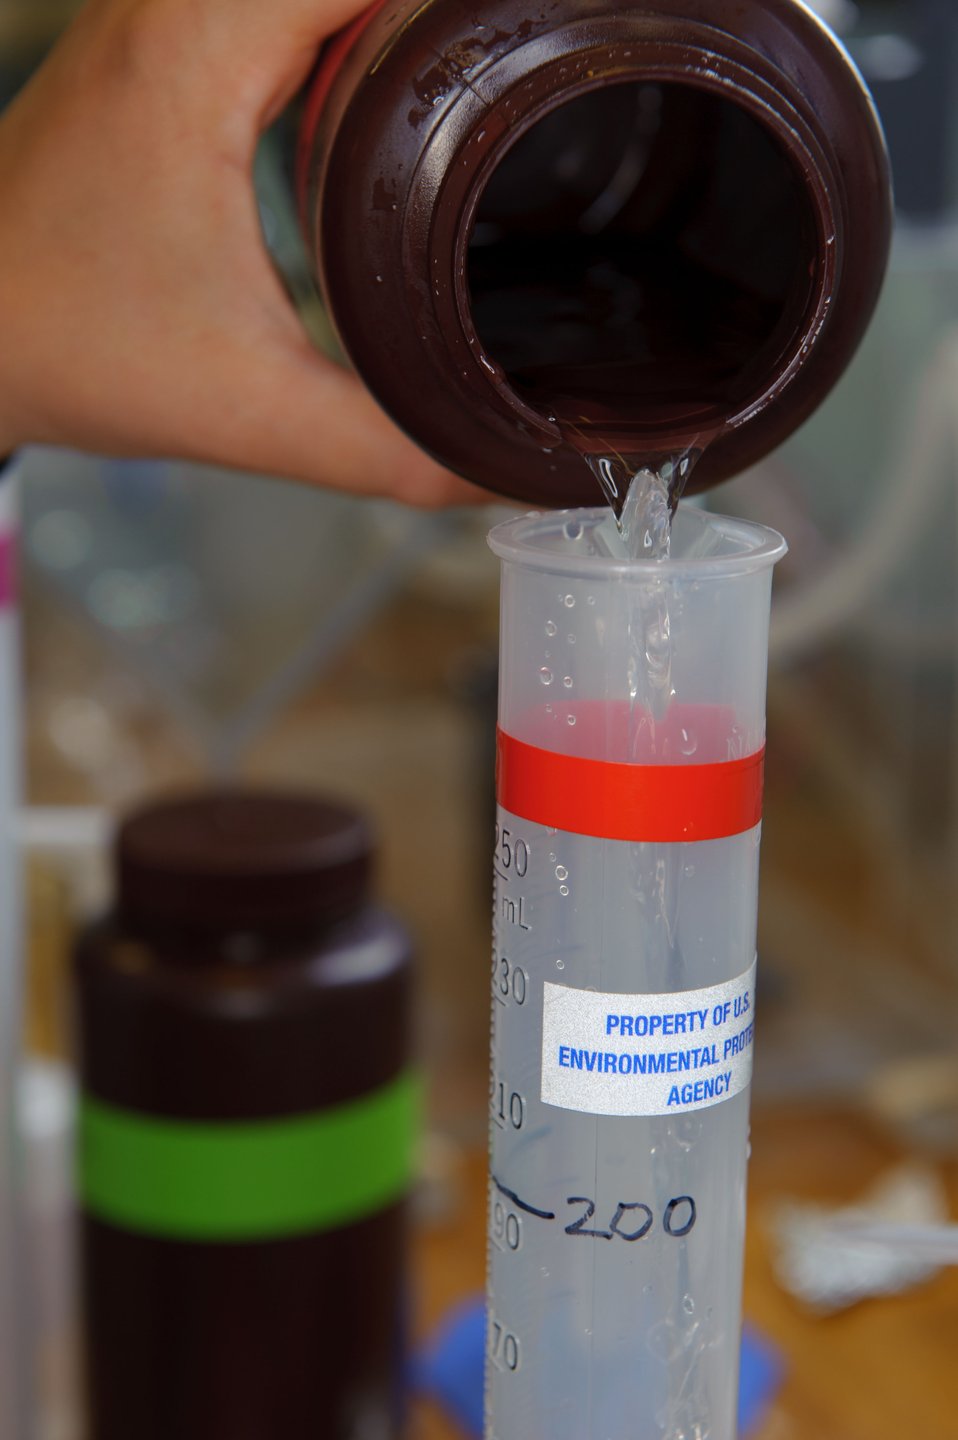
August 6, 2011, Carefully measuring water from the bottom, mid and surface levels in the water column

Each sample will be processed to analyze chlorophyll content, total nitrogen and total phosphorus.